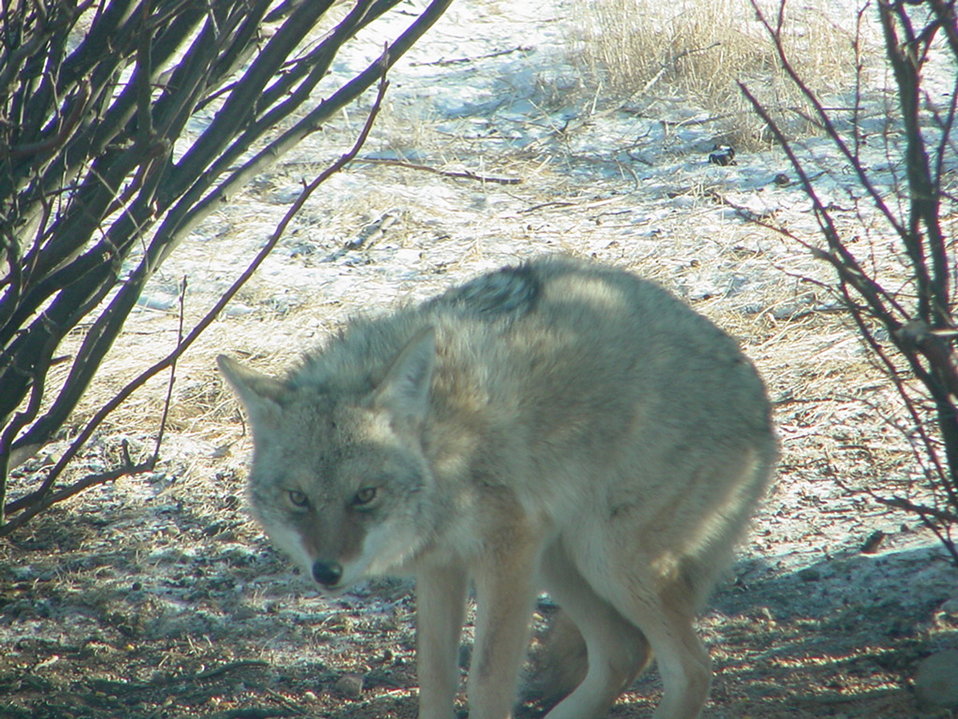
Coyote in the Bushes

The lands of Benton Lake National Wildlife Refuge were established to protect and provide habitat for migratory birds that cross State lines and international borders and are by law a Federal trust responsibility.

The refuge is of great value to waterfowl and shorebirds, as well as other migrating water-dependent bird species, because of the diversity of wetland and upland habitats that provide for the diverse life cycle needs of these species.